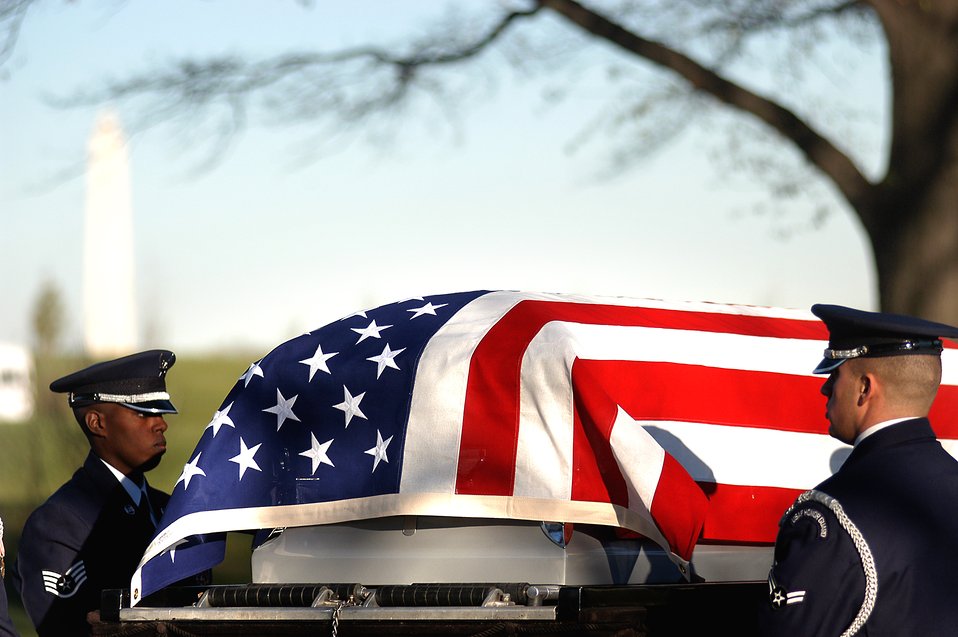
Laid to rest

Air Force Honor Guard members prepare to carry Maj. Troy Gilbert's casket during a full honors funeral Dec. 11 at Arlington National Cemetery. Major Gilbert was the pilot of an Air Force F-16 Fighting Falcon engaged in support of coalition ground combat operations that crashed approximately 20 miles northwest of Baghdad Nov. 27. Major Gilbert was assigned to the 309th Fighter Squadron, Luke Air Force Base, Ariz., and was deployed to the 332nd ExpeditionaryWing, Balad Air Base, Iraq.